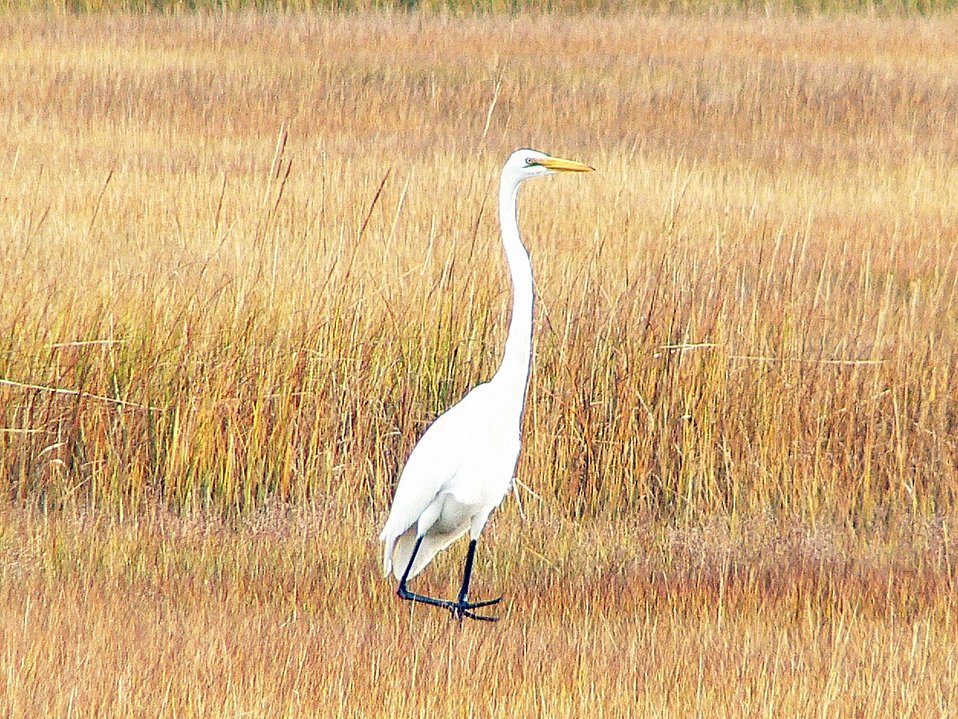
Great Egret standing in marsh.